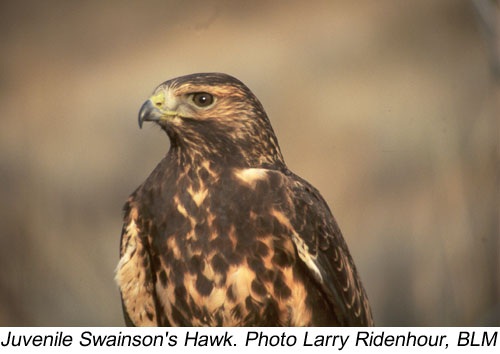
Snake River Birds of Prey National Conservation Area Birds of Prey Hawk Swainson's Hawk Wildlife